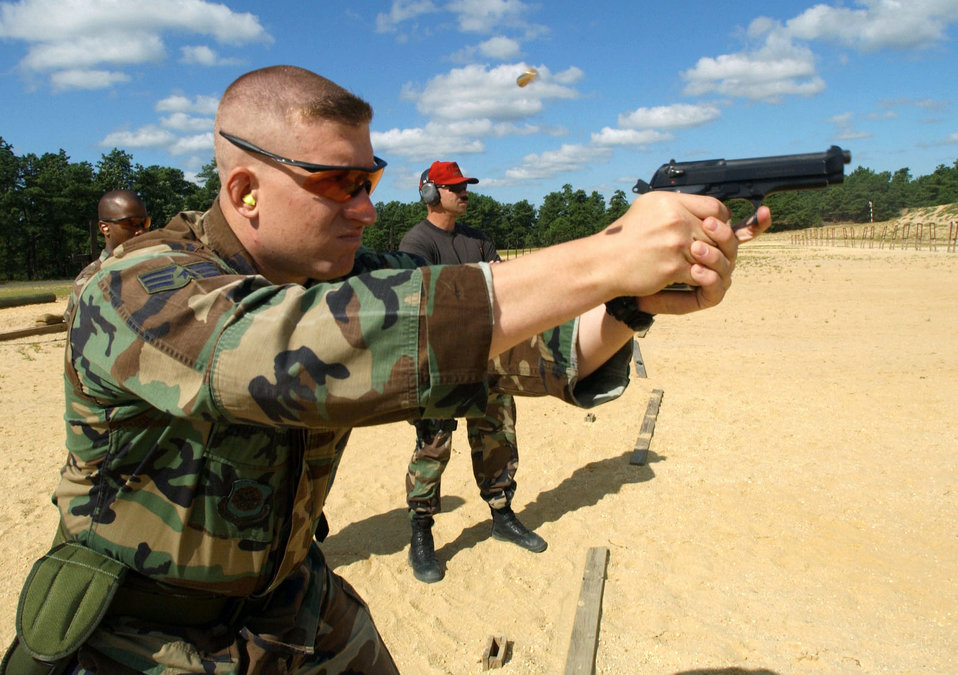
Flying brass

MCGUIRE AIR FORCE BASE, N.J. -- Senior Airman Bryan McDonald, 305th Security Forces Squadron, fires an M-9 pistol during routine training.